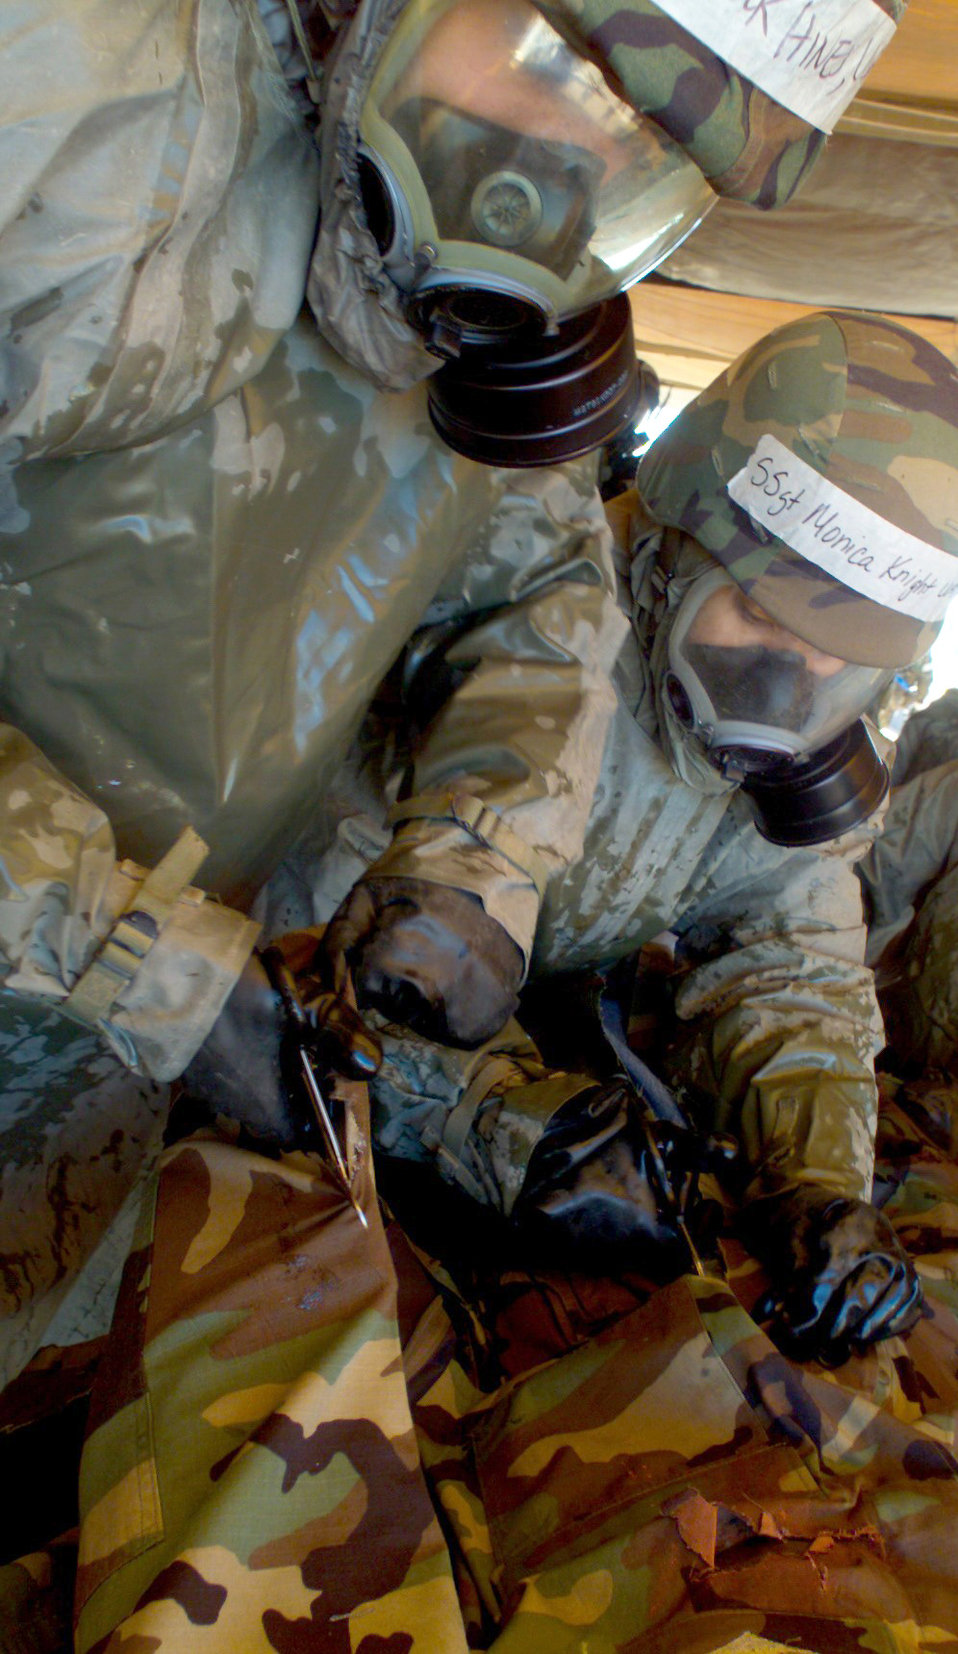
We're being bushwhacked!

DAVIS-MONTHAN AIR FORCE BASE, Ariz. -- Senior Airman Nick Hines (left) and Staff Sgt. Monica Knight cut a